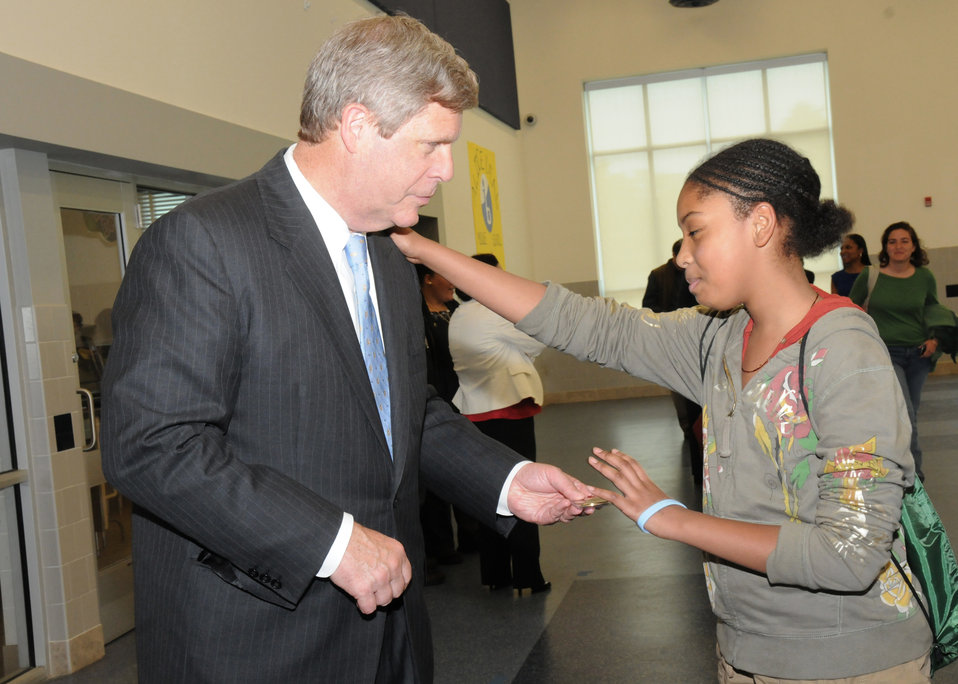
Agriculture Secretary Tom Vilsack presents his Secretary’s medal to Alice Deal Middle School 6th grader Emma King, during his visit to the school in Washington, D. C., on Thursday, May 13, 2010. USDA photo . USDA photo 10di1358-251